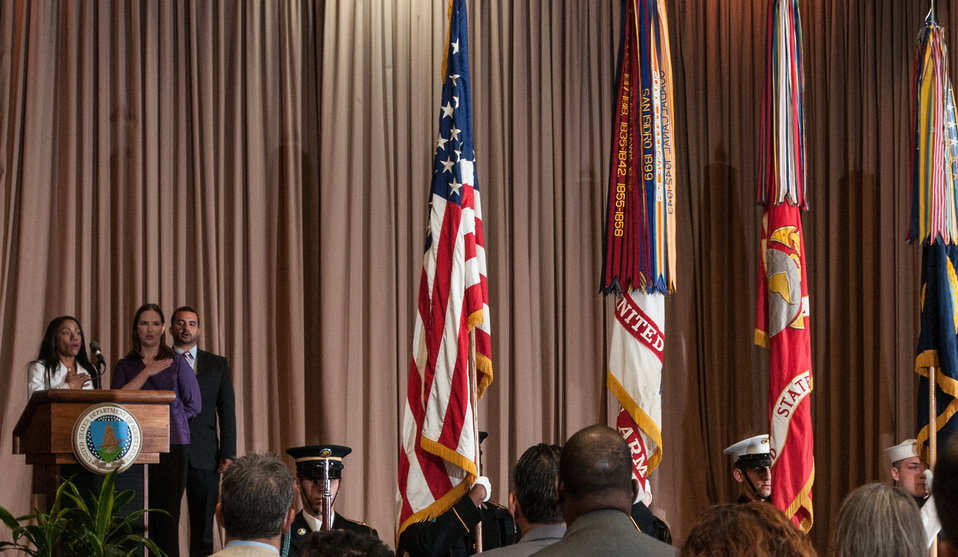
U.S. Department of Agriculture (USDA) Office of Human Resources Management Workforce Analyst Yetzenia Correa leads the Pledge of Allegiance, during the 2013 National Hispanic Heritage Month ”Hispanics: Serving and Leading our Nation with Pride and Honor,” on Thursday, Sept. 19, 2013, in the Jefferson Auditorium, USDA Headquarters, Washington, D.C.